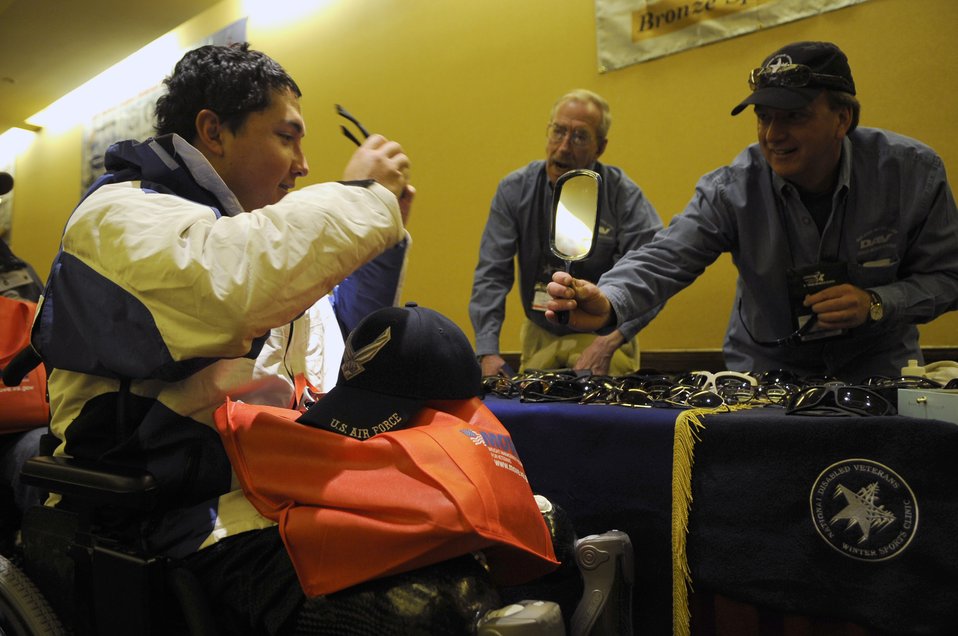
Winter rehabilitation clinic shows veterans potential

Senior Airman Kevin Krogh tries on a pair of sunglasses inside The Silver Tree Hotel March 29 during registration for the 23rd National Disabled American Veterans Winter Sports Clinic in Snowmass Village, Colo. Airman Krogh lost both legs in a major car accident in 2007 and this will be his first year attending the sports clinic. Airman Krogh is assigned to Fort Sam Houston in San Antonio.